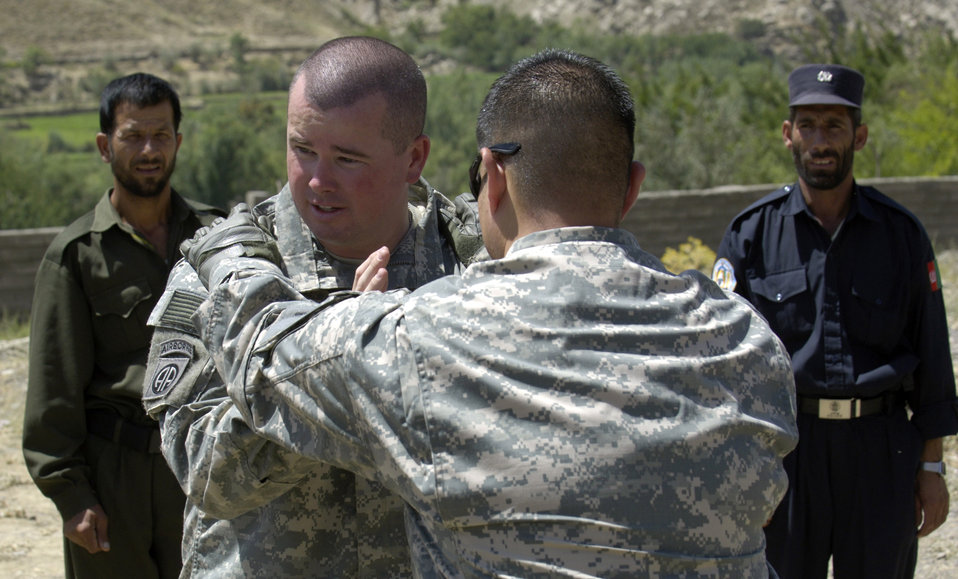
Panjshir PRT

Tech. Sgt. Michael Downey (second from left) and Staff Sgt. Andre Sanchez-Romero demonstrate how to escape from a choke hold Aug. 6. The security forces Airmen, members of the Panjshir Provincial Reconstruction Team, traveled to the Anaba district of Panjshir Province, Afghanistan, to provide training to Afghan National Police in the district. Sergeant Downey is deployed from the Pentagon, Washington, D.C. Sergeant Sanchez-Romero is deployed from Minot Air Force Base, N.D. Their mission in the PRT is to assess the infrastructure and development of the ANP forces working throughout the province